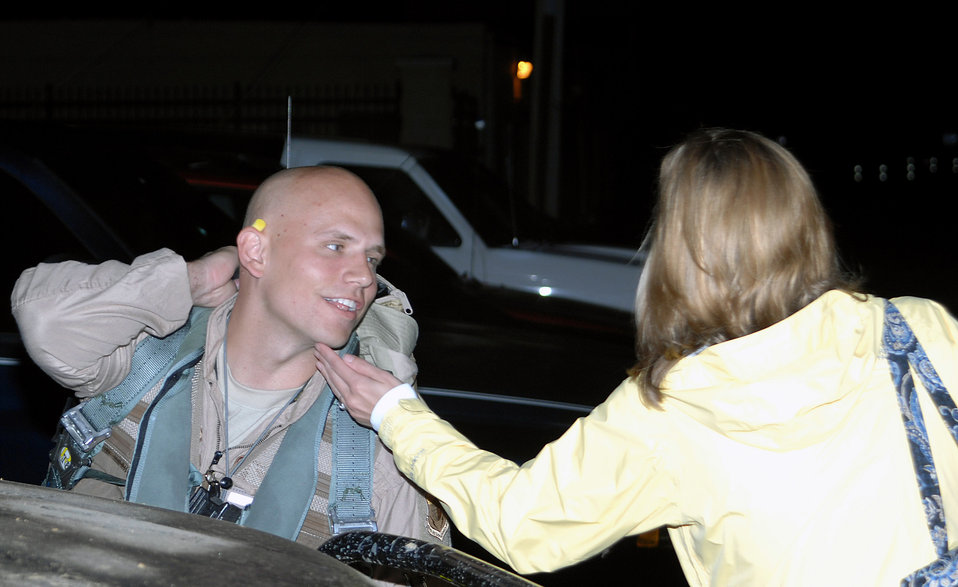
Airmen mobilize to confront Afghan insurgency

Capt. Steven Baker, 336th Fighter Squadron, bids a final farewell before heading to the flightline for an early morning departure from Seymour Johnson Air Force Base, N.C., April 29. Many families and supporters crowded the street behind the 336th FS before going to the end of the runway to see their loved ones and colleagues depart into the night.